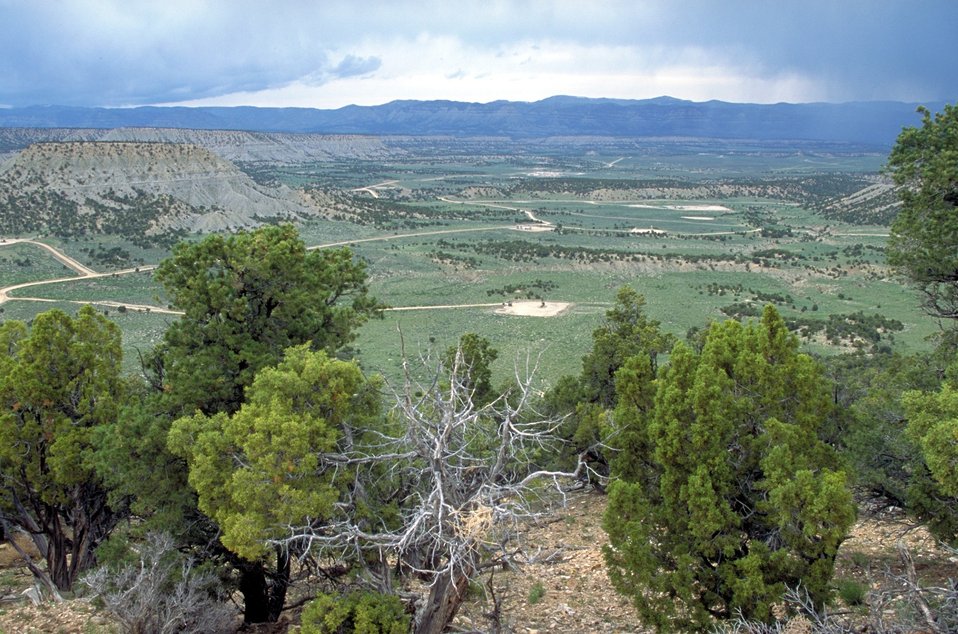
Overlooking coal bed methane production units near Price, Utah.